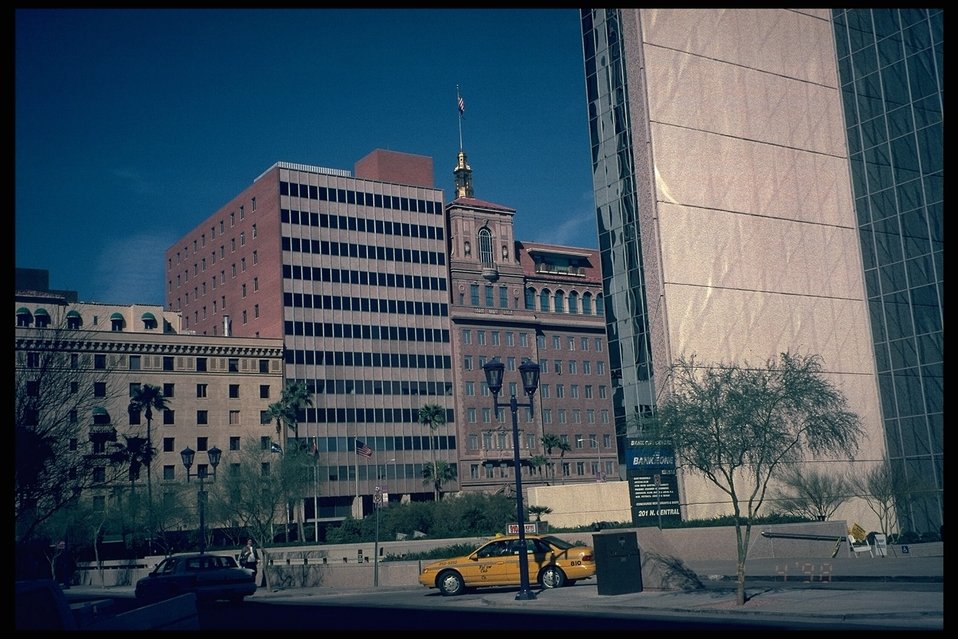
In the heart of downtown Phoenix, the Arizona State Office is nestled between several highrises. 222 North Central Avenue, Phoenix, Arizona 85004. Phone: 602-417-9200, or 602-417-9504.